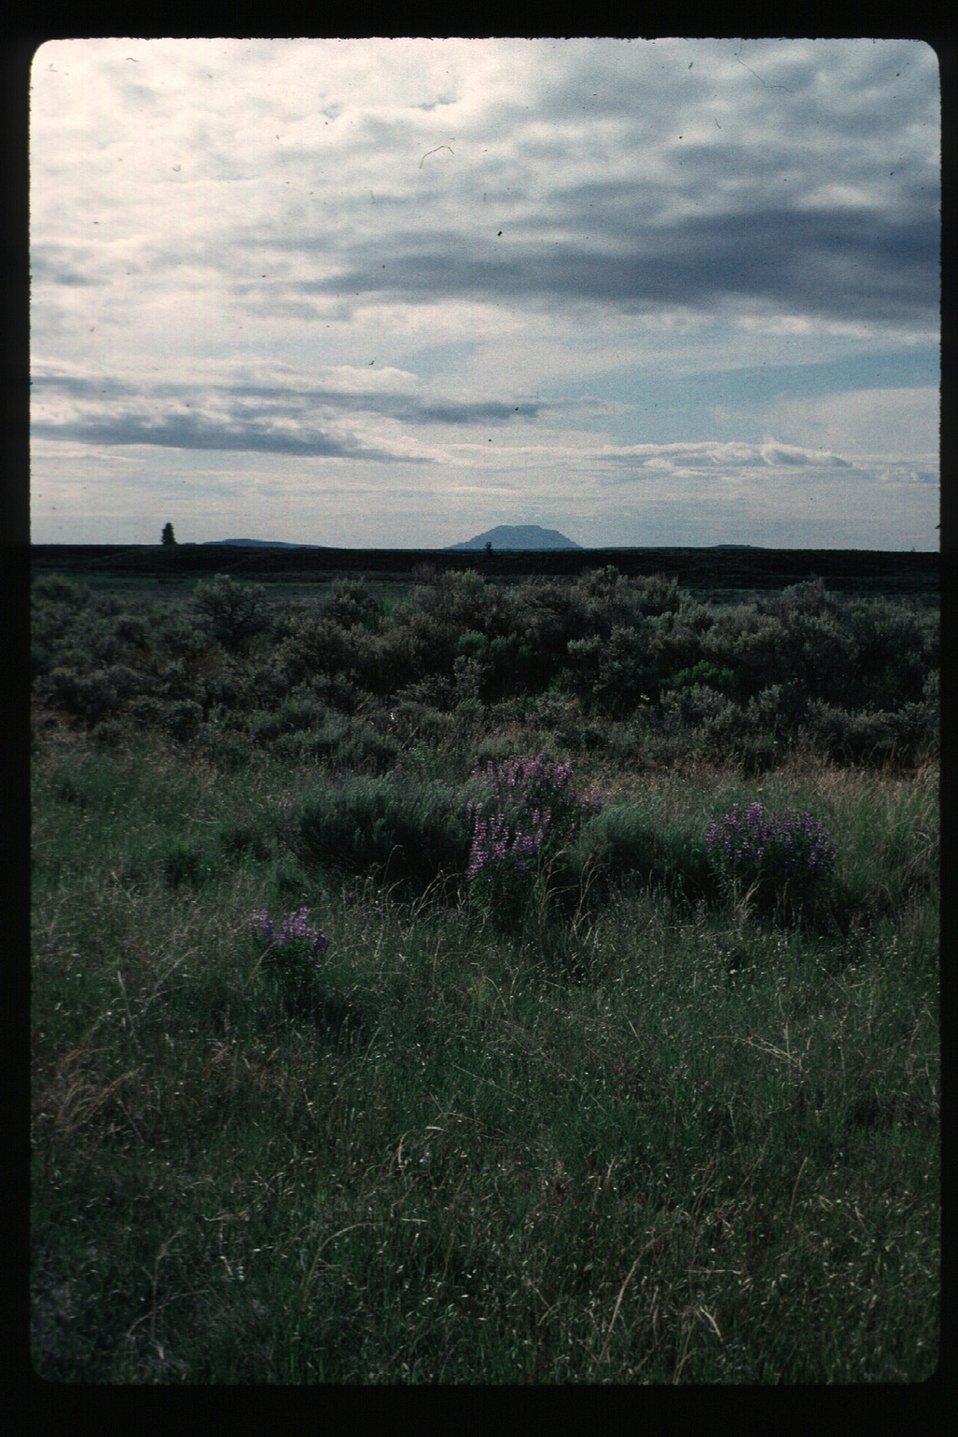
Wet Creek riparian project Idaho Falls Field Office USRD Upper Snake River District